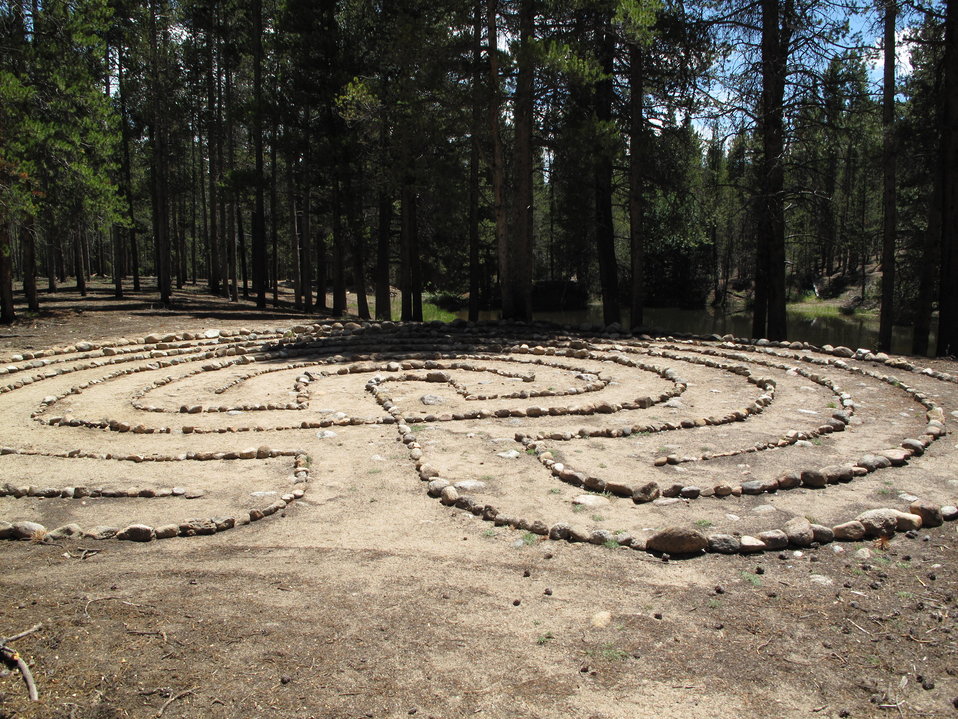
Leadville National Fish Hatchery

Leadville is the first National Fish Hatchery to boast its own labyrinth, which was constructed by one of the hatchery's volunteers.